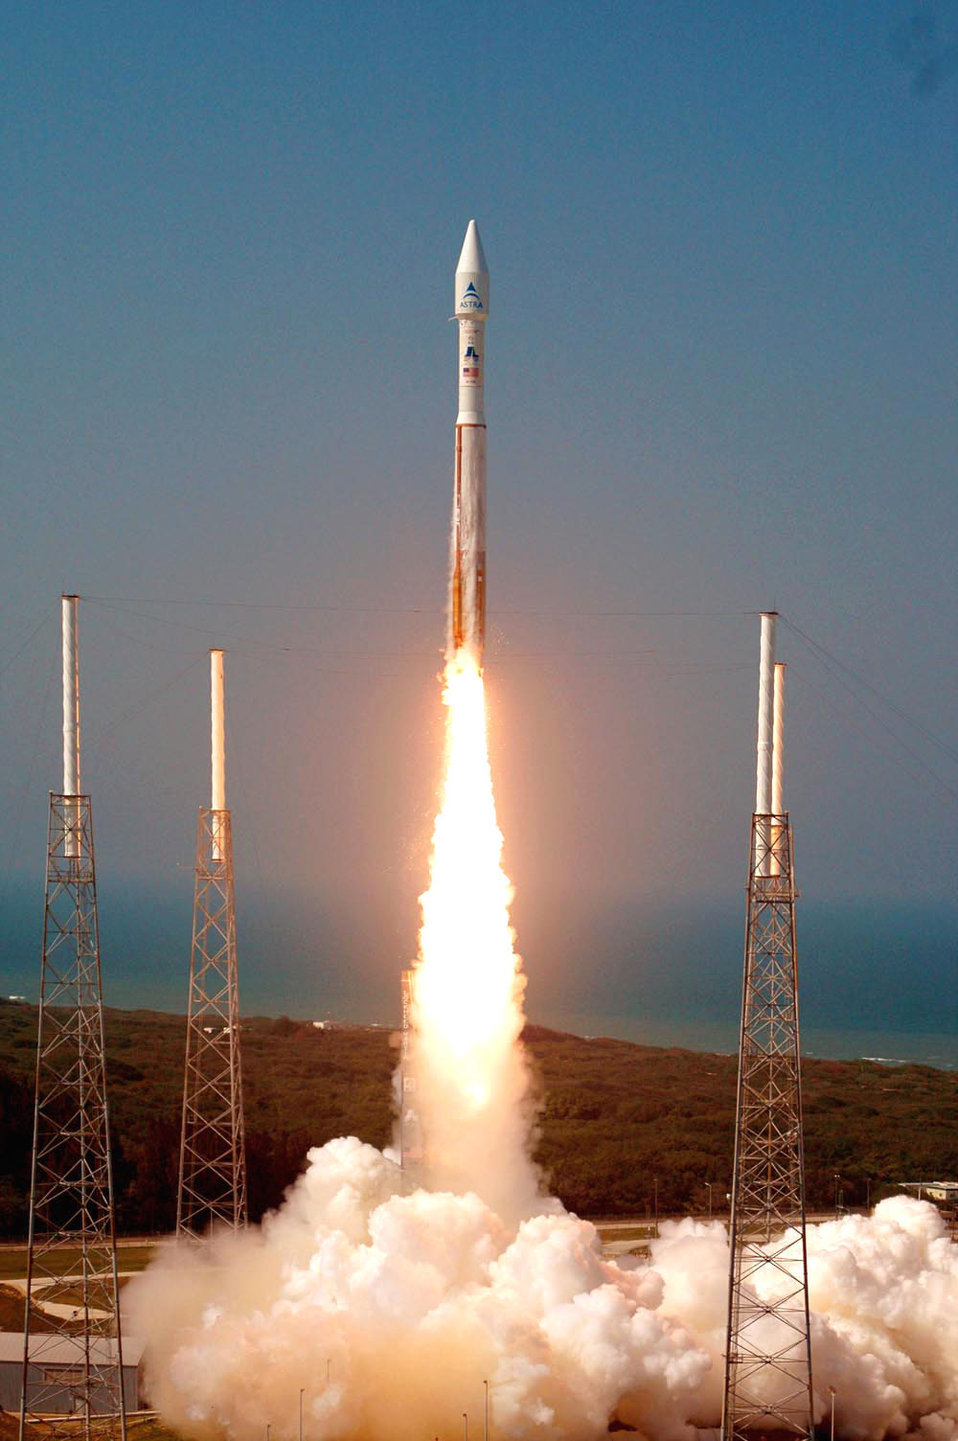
Atlas V rocket successfully launches satellite

An Atlas 5 booster blasts off from Space Launch Complex 41 at Cape Canaveral Air Force Station, Fla, on Thursday, April 20, 2006. The rocket carried a commercial television satellite into orbit.